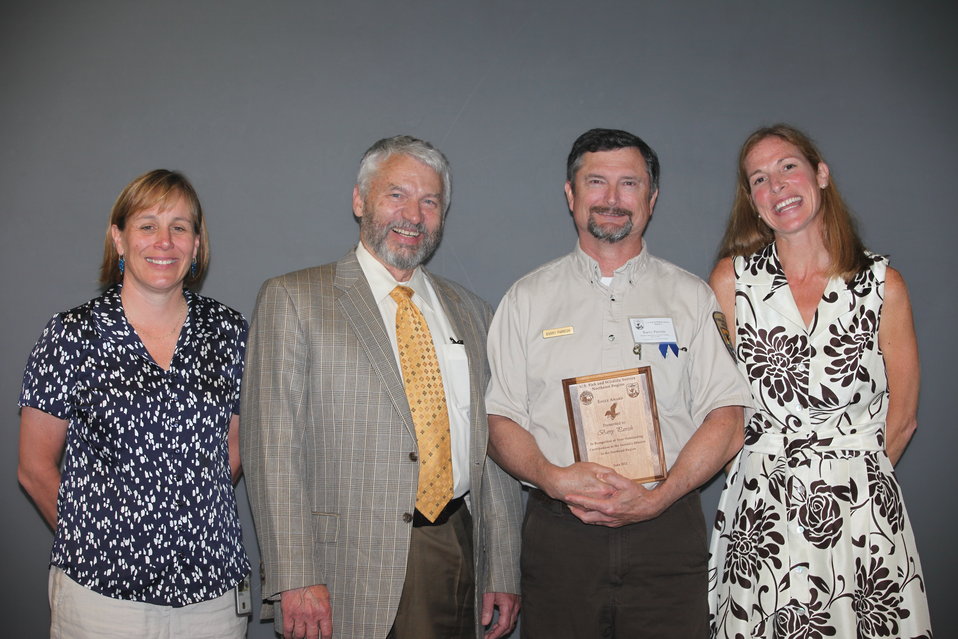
Barry Parrish, Silvio O. Conte National Fish and Wildlife Refuge recieved the Eagle Award.
From left to right: Deputy Regional Director Deb Rocque, Deputy Director Rowan Gould, Barry Parrish, and Regional Director Wendi Weber